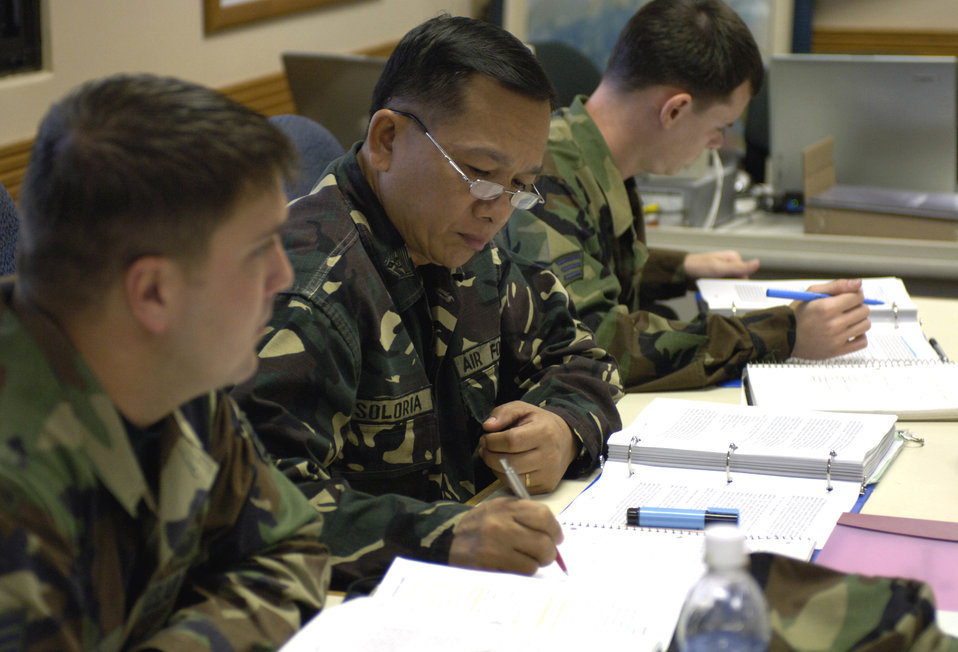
Philippine first

Command Sgt. Maj. of the Philippine Air Force Cesar Soloria takes notes during Airman Leadership School class, Tuesday, March 7, 2006, at Hickam Air Force Base, Hawaii. The command sergeant major and four other students are the first Philippine Air Force Airmen to attend the class. They will take back the lessons learned and develop their own course within their air force.